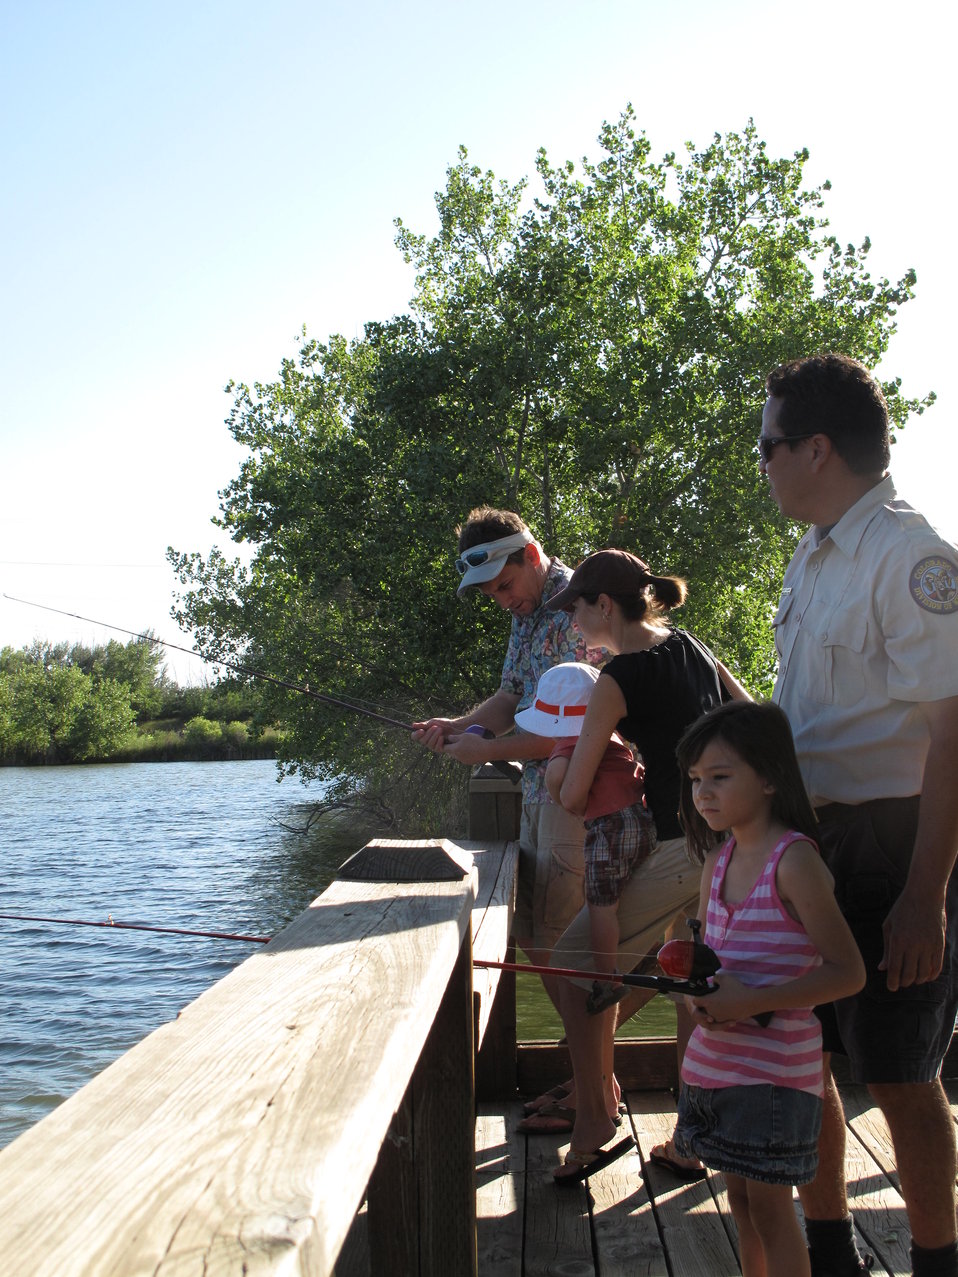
ELK fishing trip to RM Arsenal